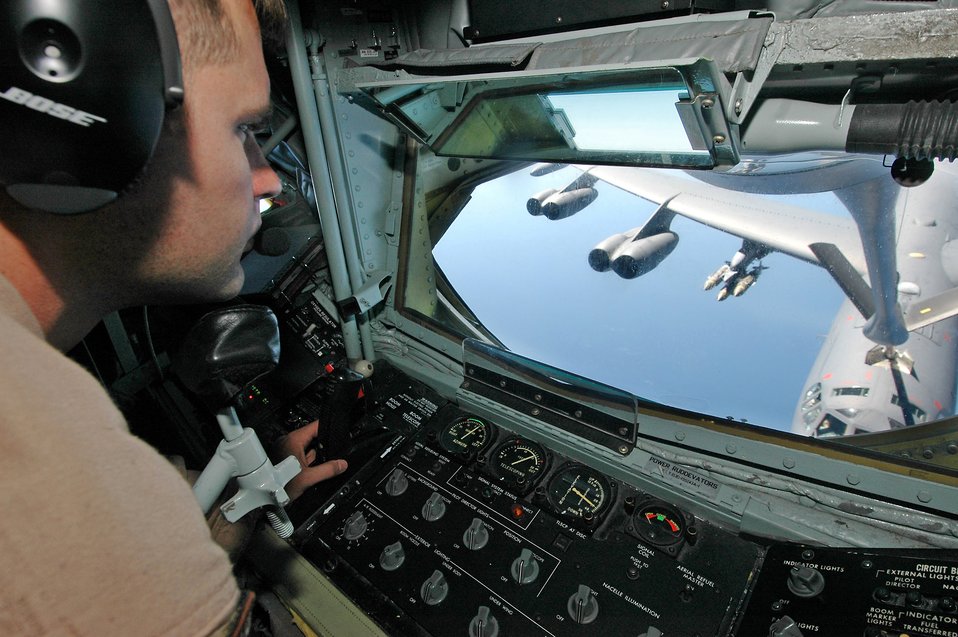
Close air support

Airman 1st Class Ben Davis refuels a B-52 Stratofortress bomber from a KC-135 Stratotanker, Monday, March 13, 2006, during a mission in support of Operation Enduring Freedom. The B-52 provides close air support for ground troops in Afghanistan. Davis is a boom operator assigned to the 28th Expeditionary Air Refueling Squadron.